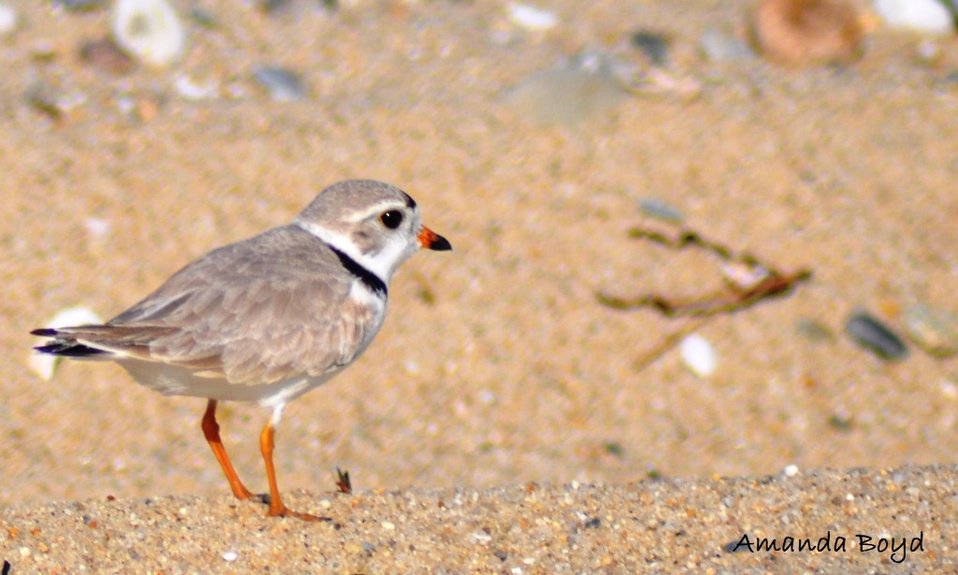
piping plover

Nantucket National Wildlife Refuge